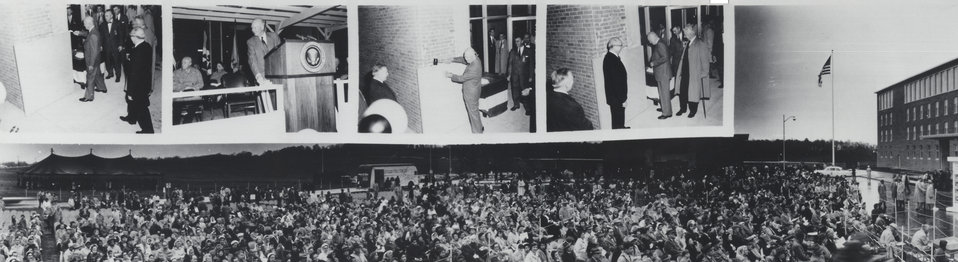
DEDICATION OF THE ATOMIC ENERGY COMMISSION BUILDING IN GERMANTOWN, MARYLAND WITH PRESIDENT EISHOWER. (NOV 8, 1957)